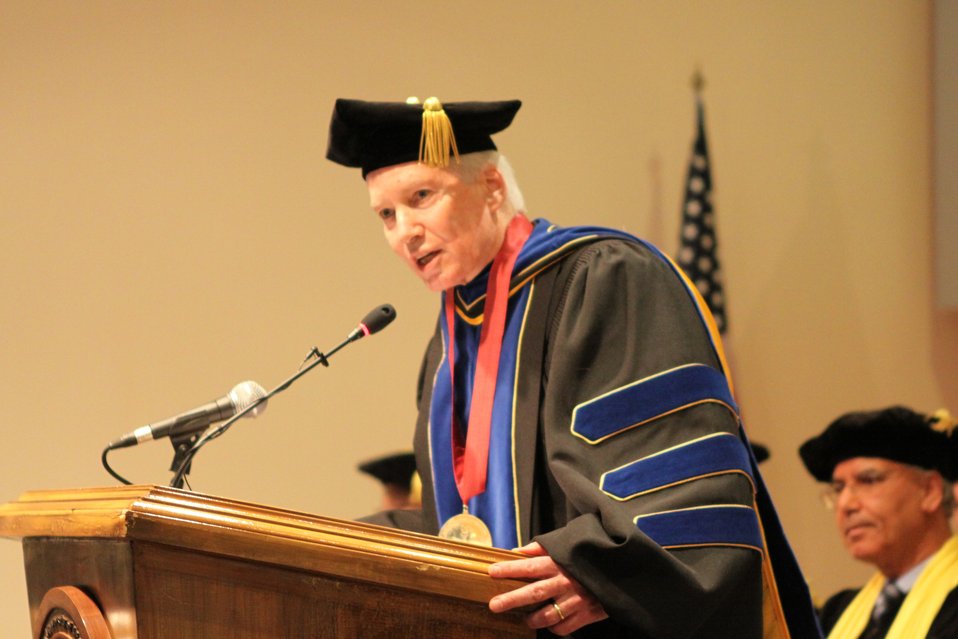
100526 AUAF Graduation 187